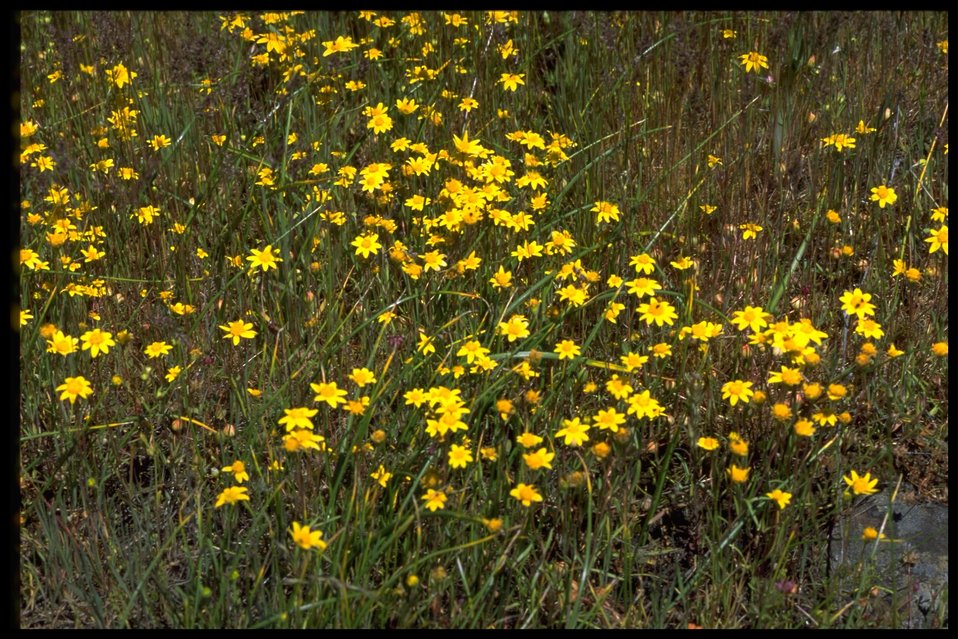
Farshot of Lasthenia californica.